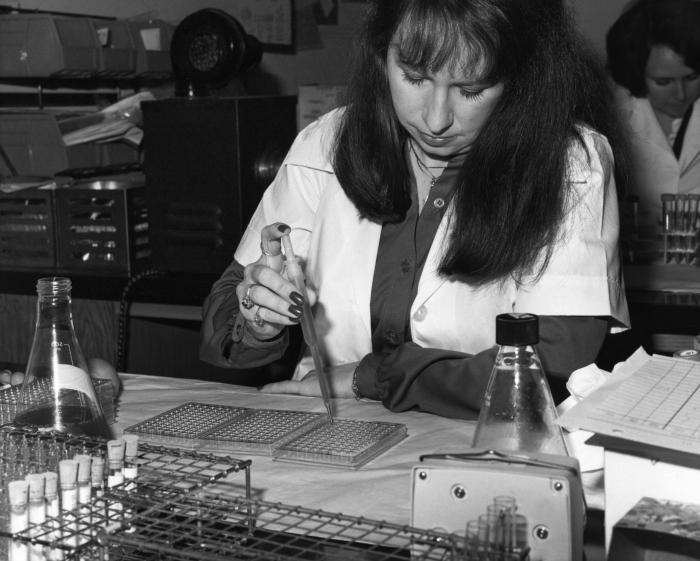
This Centers for Disease Control microbiologist was shown here delivering tissue culture specimens into a microtiter plate using an instrument know as a pipetter. The culture samples were to be tested for the presence of the influenza virus.